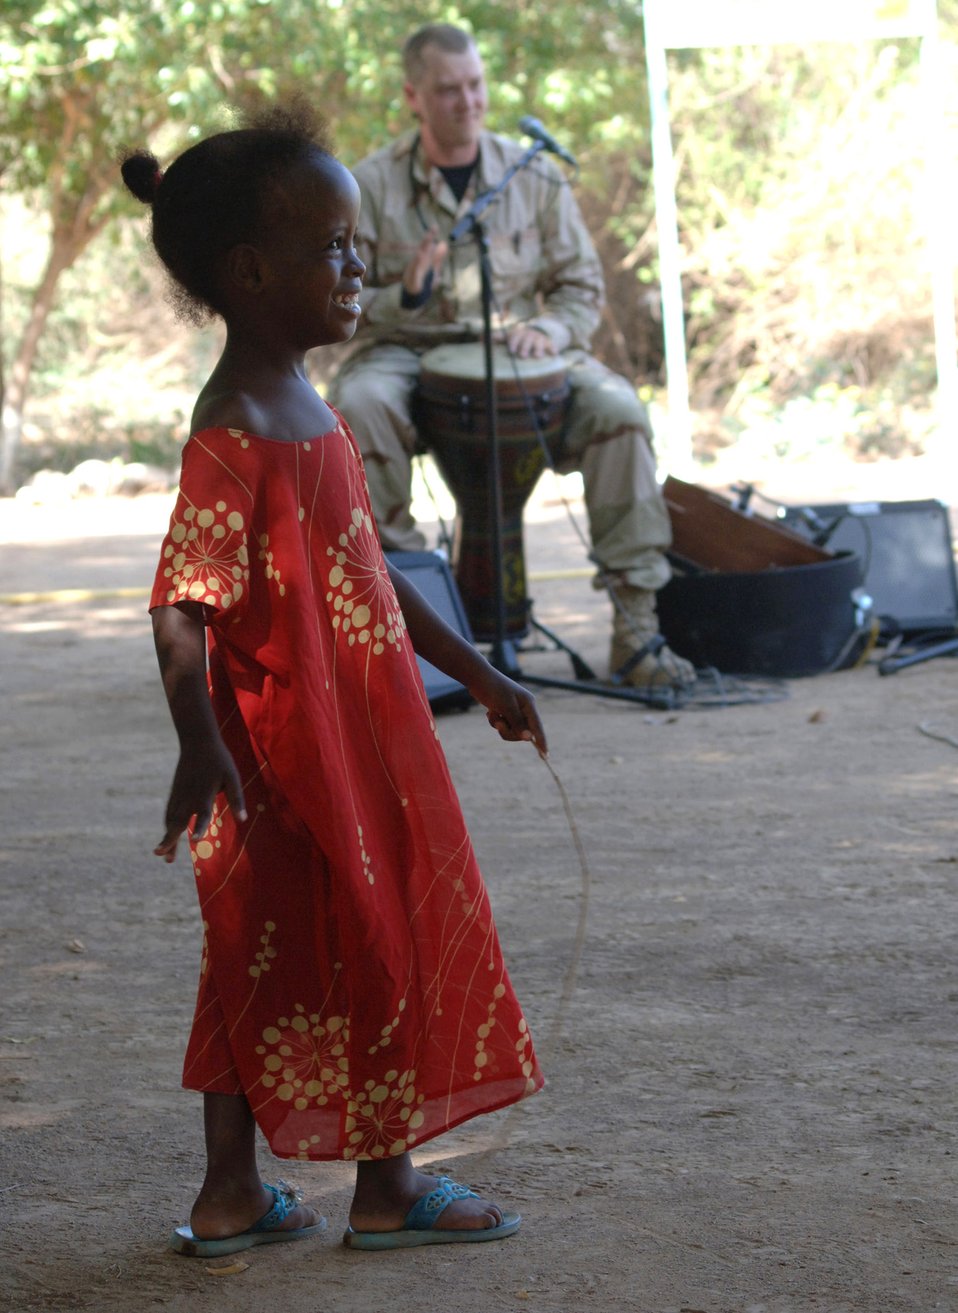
CENTAF band, Marines entertain Damerjog villagers

A young girl form the village of Damerjog, Djibouti, dances to music played by the U.S. Central Command Air Forces Expeditionary Band the